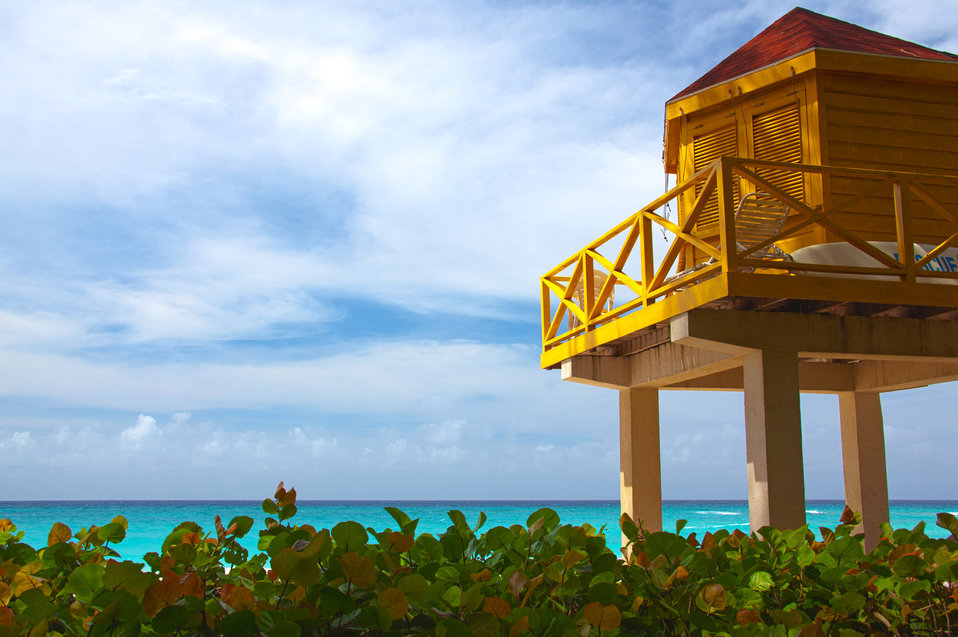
Lifeguard beach tower

Yellow lifeguard tower in barbados.